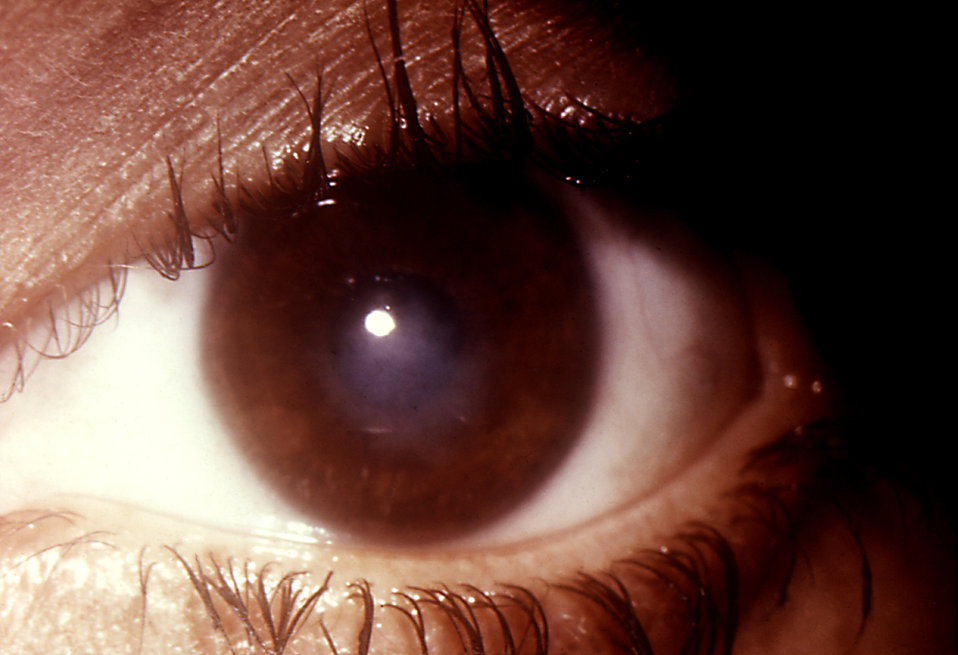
Note the cloudiness of this patient's right eye in this case of gonococcal conjunctivitis due to N. gonorrhoeae bacteria.